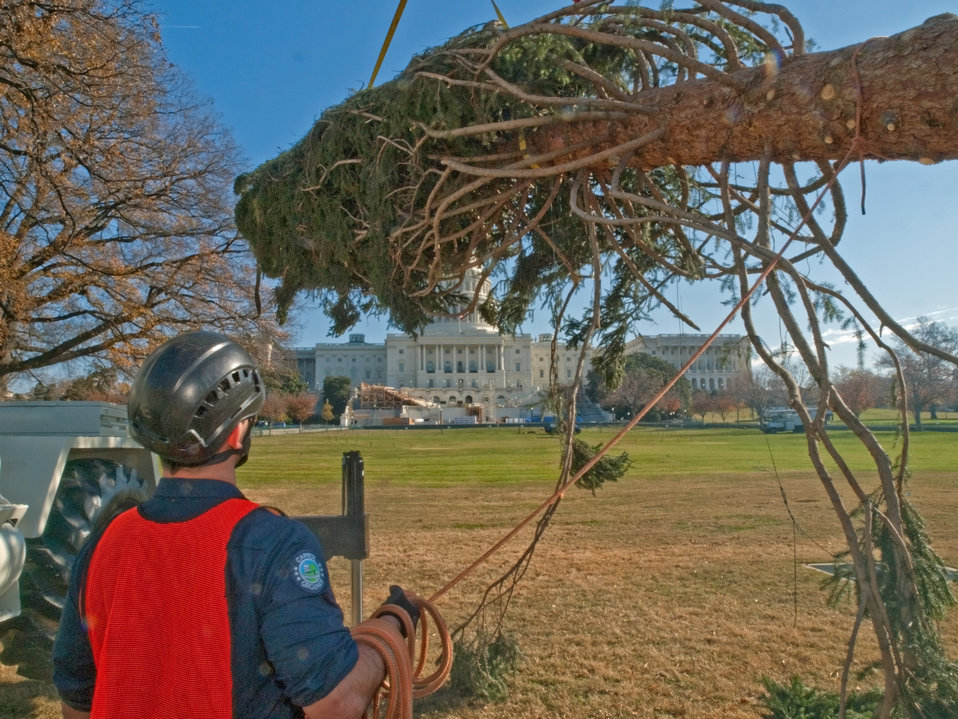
Members of the Capitol grounds crew move the 2012 Capitol Christmas Tree from its truck after it arrived in Washington, D.C. on Nov.26, 2012. The 73-foot Englemann spruce traveled from the White River National Forest in Colorado.